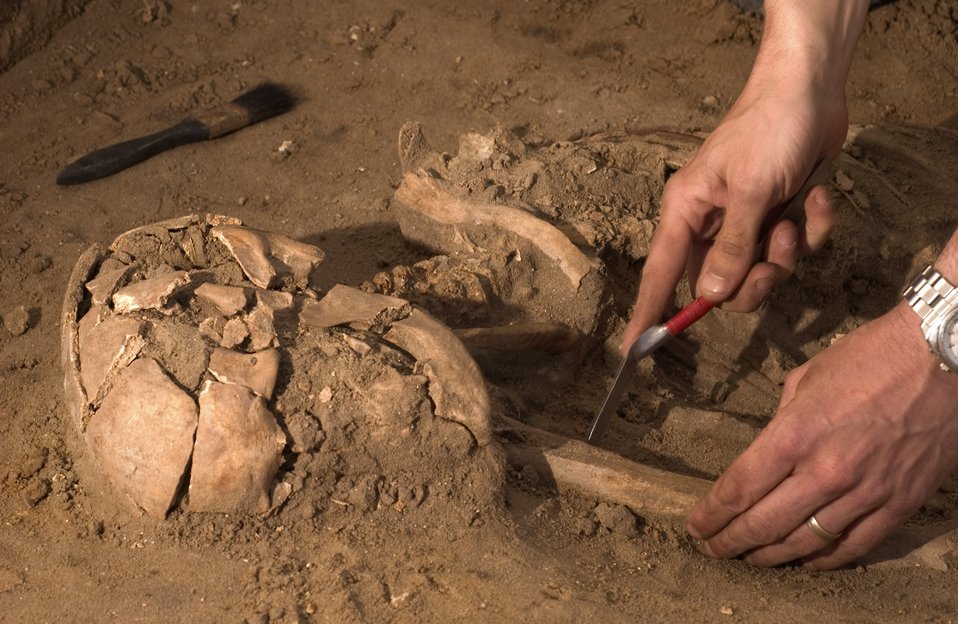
Skeletal remains discovered during dig at Mildenhall

Human remains were discovered March 12 during an archeological dig at the RAF Mildenhall officers' housing area in Beck Row. The skeleton was completely uncovered March 14. It is thought to be up to 2,000 years old. The skeleton will now be studied by archeology specialists to uncover further details about it.